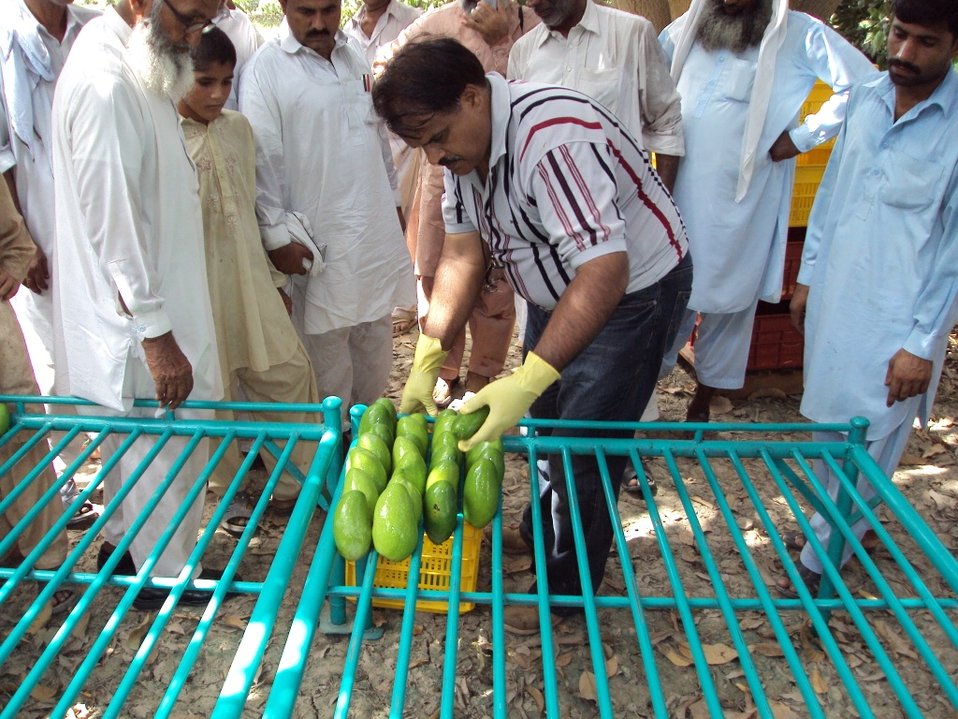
FARMS mangoes

USAID has also trained 3,000 farmers how to handle and process mangoes to preserve their quality and shelf life. USAID is also helping the farmers attain GLOBAL Good Agricultural Practices (GAP) certification and create market linkages with international buyers.